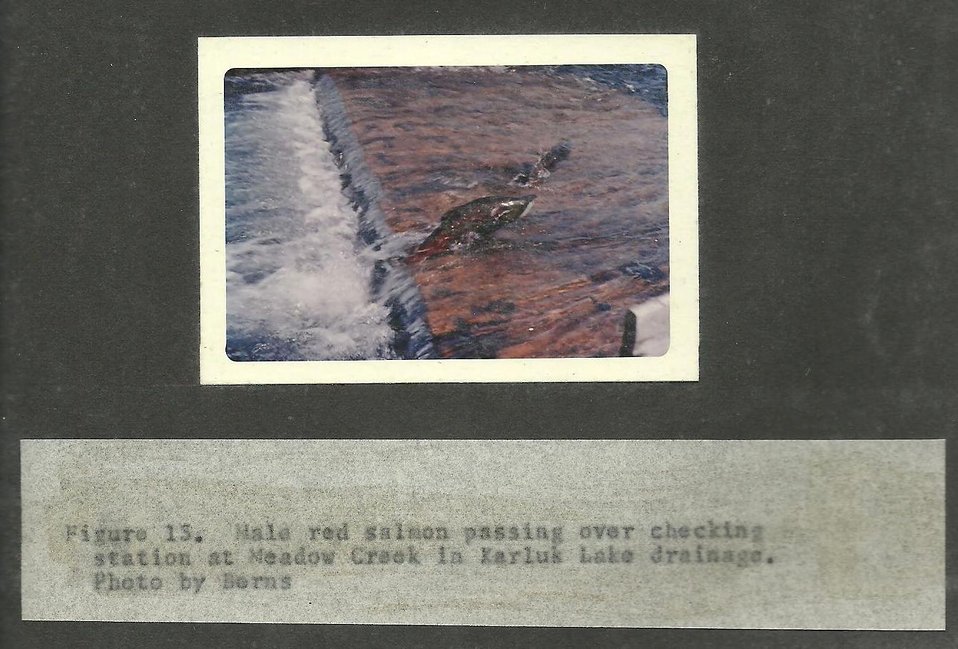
(1964) Red Salmon at Meadow Creek

Credit: USFWS

Source and Contact: Kodiak National Wildlife Refuge